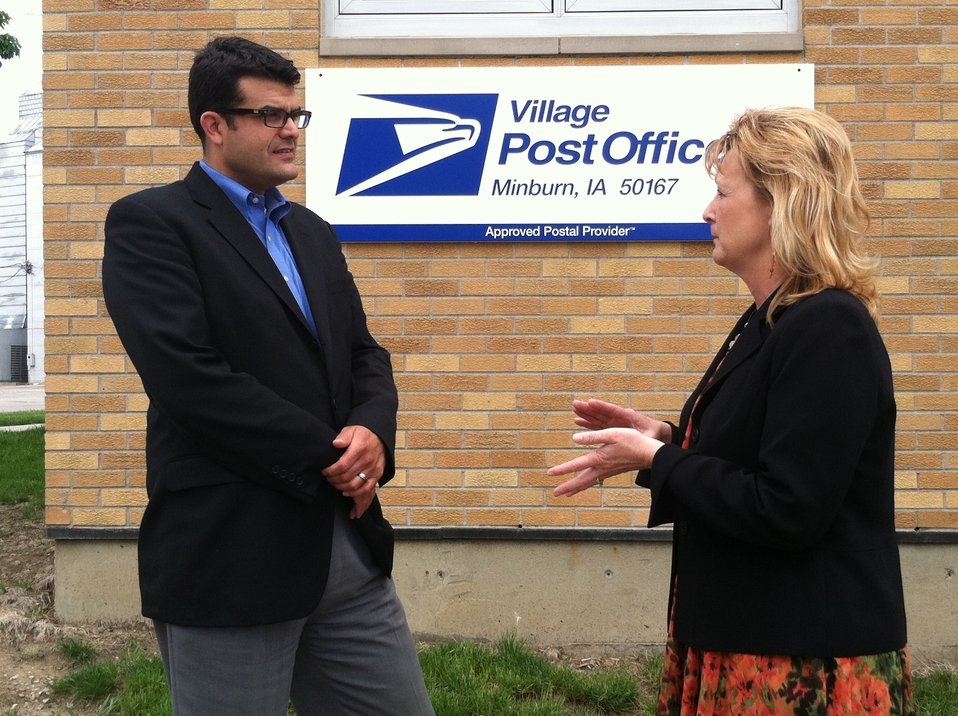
photo

U.S. Department of Agriculture (USDA) Rural Development (RD) Rural Utilities Service (RUS) Administrator John Padalino and Minburn Communications general manager Deb Lucht talk in front of the Village Post Office in Minburn, IA. USDA recently helped finance a telecommunications upgrade in Minburn, IA. Minburn Communications also announced last month that it would be Iowa’s third Village Post Office, a partnership program with the U.S. Postal Service to assist communities facing a reduction in hours at their local post office. Minburn’s post office is now open only four hours a day. Customers with basic postal needs can visit Minburn Communications nine hours a day for assistance.